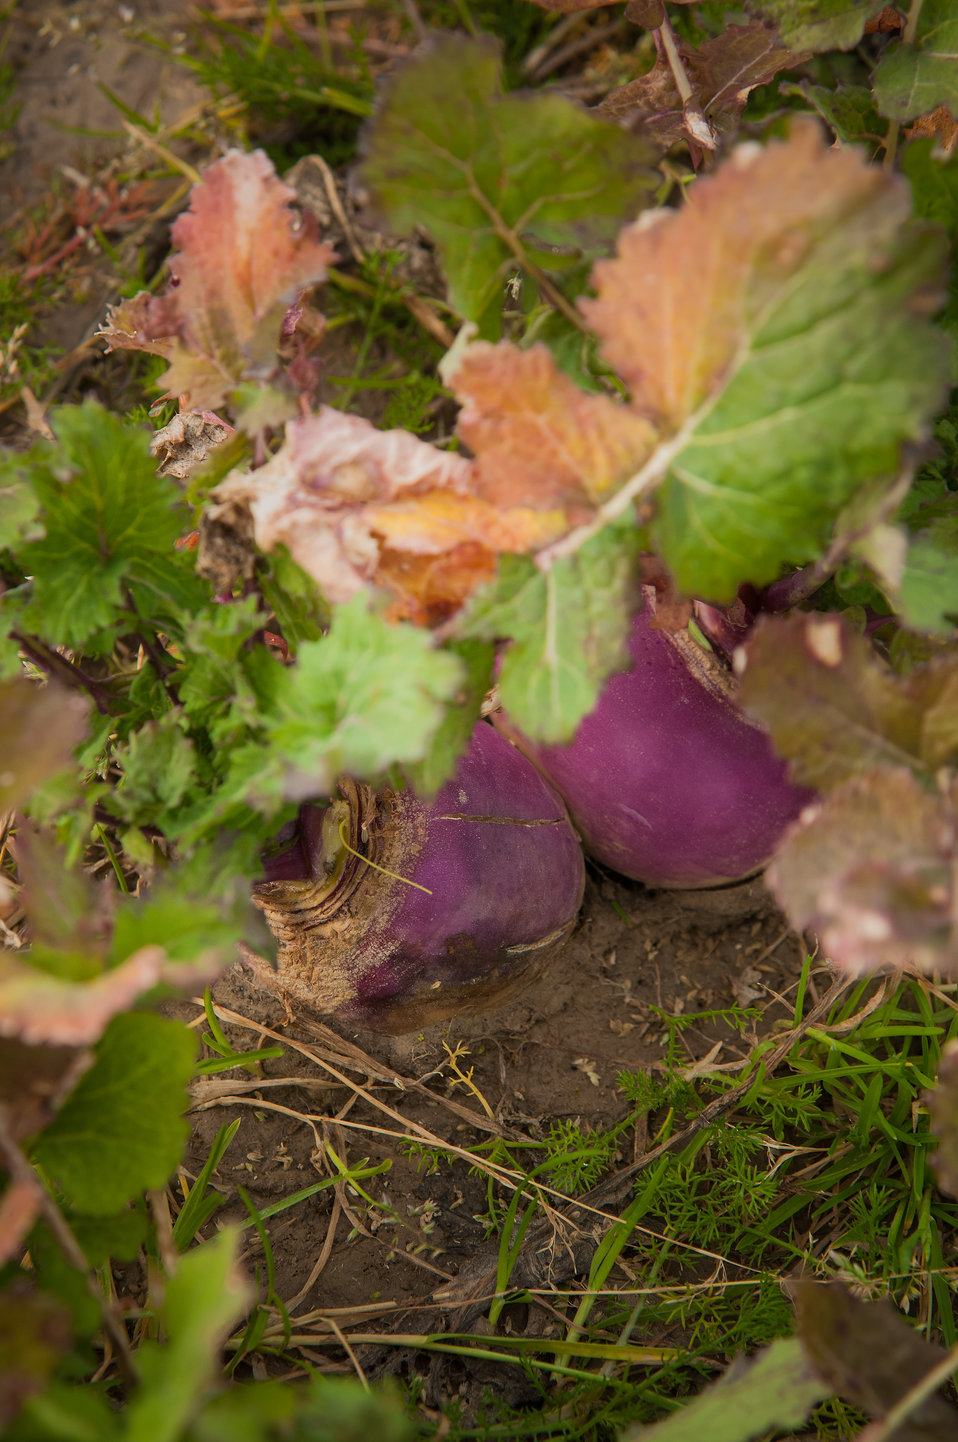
Turnips are one of many crops being grown in demonstration acreage at the East Arkansas Enterprise Community, (EAEC) Inc. in Forrest City, AR. EAEC is one of 42 community-based organizations that are part of the Arkansas Delta Seeds of Change (ADSOC) Initiative. Thanks to the efforts of the U.S. Department of Agriculture (USDA) in partnership with Heifer International (an International organization whose mission is to work with communities to end hunger and poverty and care for the Earth) and various for-profit and non-profit organizations have organized the “Seeds of Change Implementation” Plan to use sustainable agriculture to build food systems in the Arkansas Delta. The program has evolved into the ADSOC Initiative.